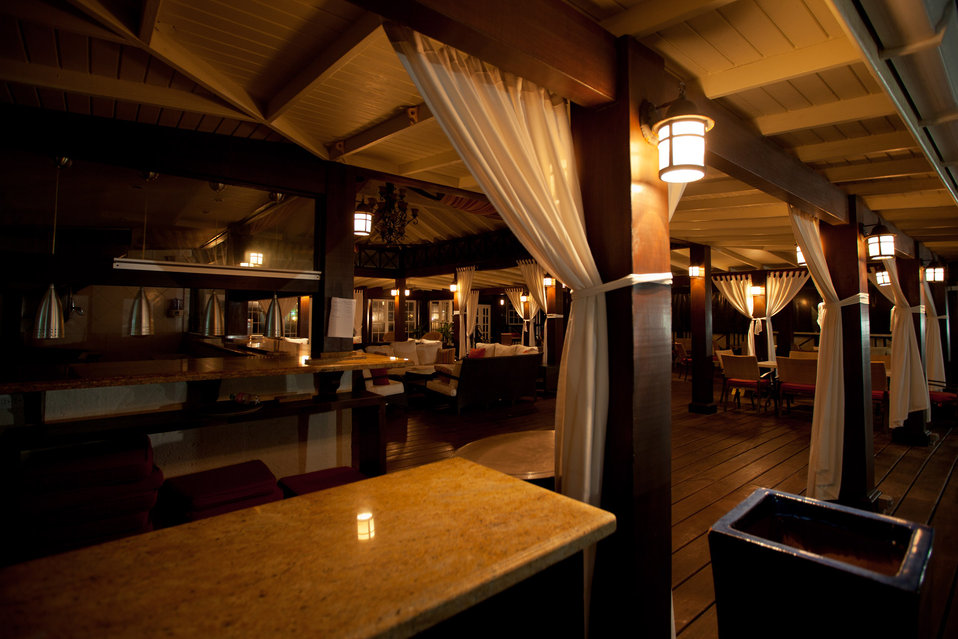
Restaurant at night

Empty restaurant interior at night.